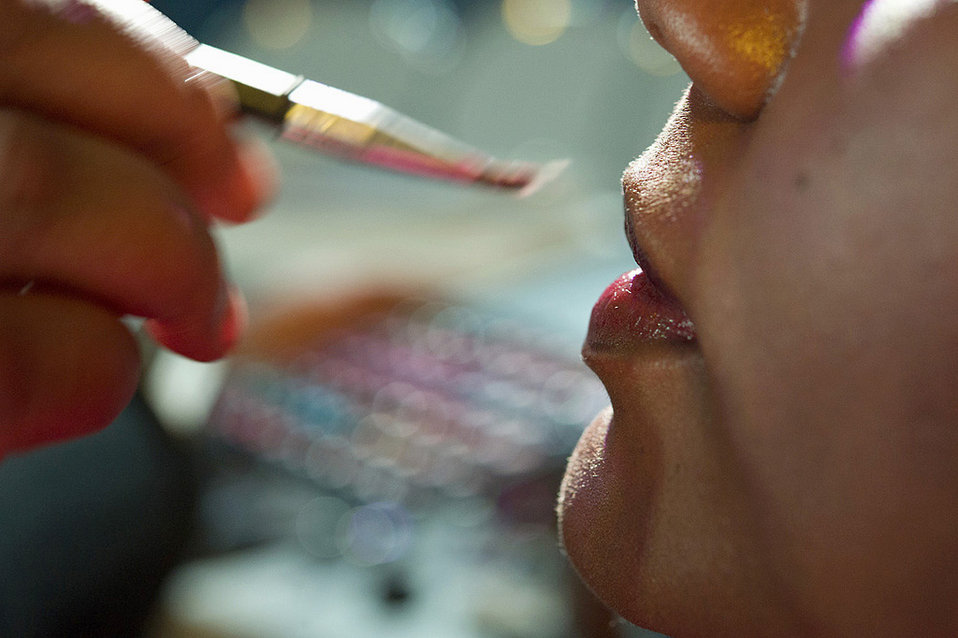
Airmen win honors at worldwide talent search

Staff Sgt. Rosalyn Moody has lip gloss applied Dec. 10, 2010, before a stage audition during the Tops in Blue Worldwide Talent Competition at Lackland Air Force Base, Texas. Sergeant Moody is a cargo processing supervisor from the 436th Aerial Port Squadron at Dover Air Force Base, Del.